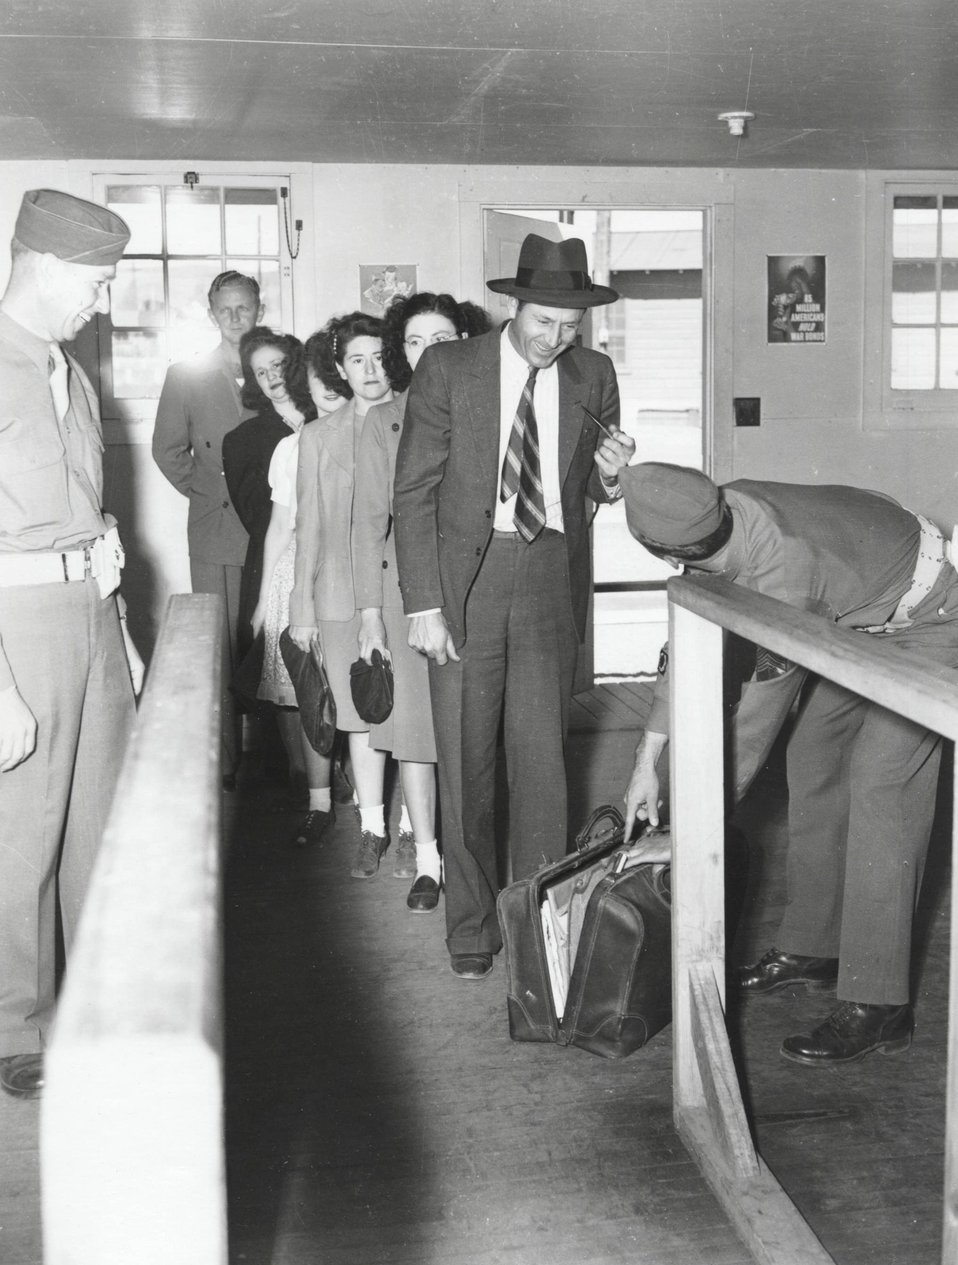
SECURITY CHECK